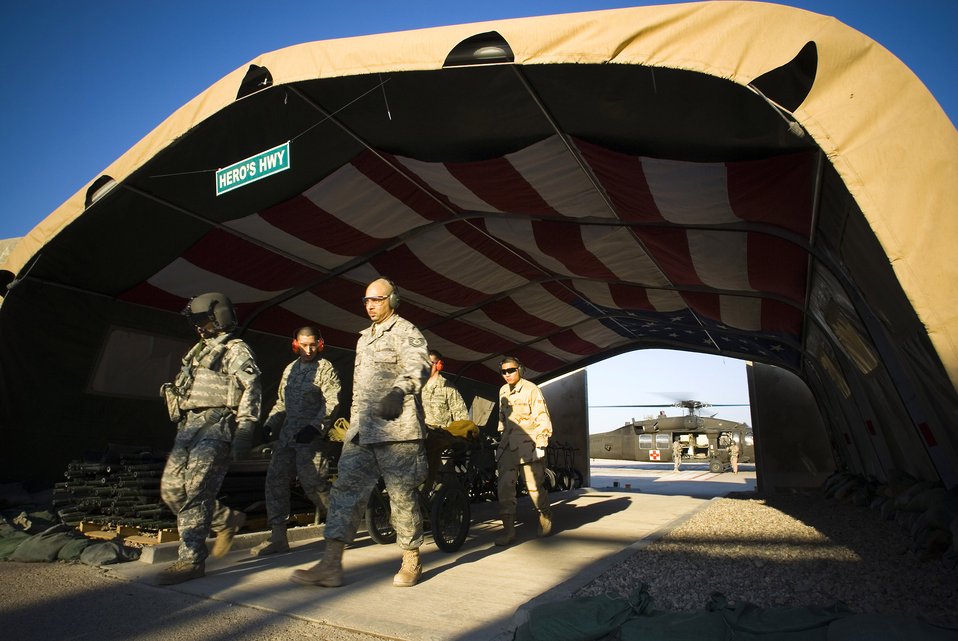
The Hero's Highway

An injured Airman is rushed through